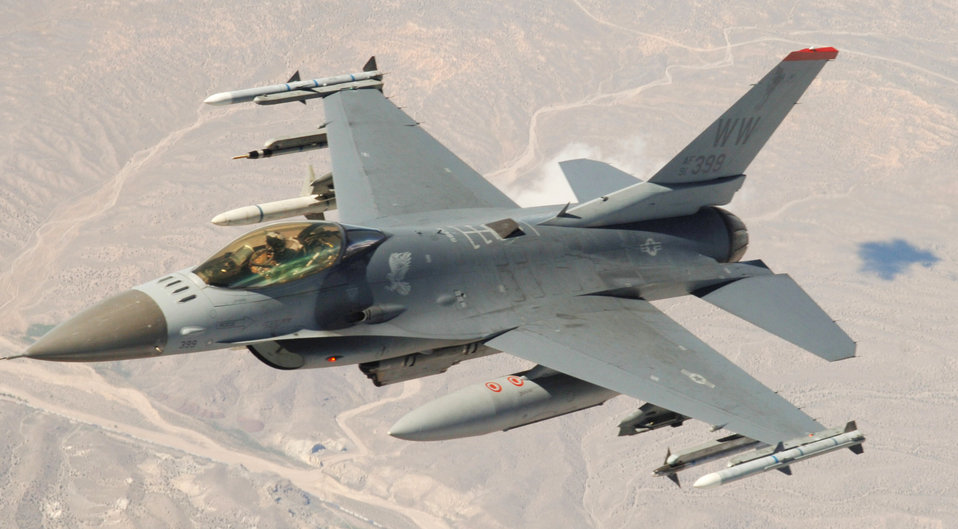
Refuelin' at the Flag

An F-16 Fighting Falcon from Misawa Air Base, Japan, flies at Red Flag, a two-week exercise that tests and trains servicemembers in real-time combat situations at Nellis Air Force Base, Nev. Red Flag is conducted over the Nevada Test and Training Range, which has more than 2.9 million acres of airspace.